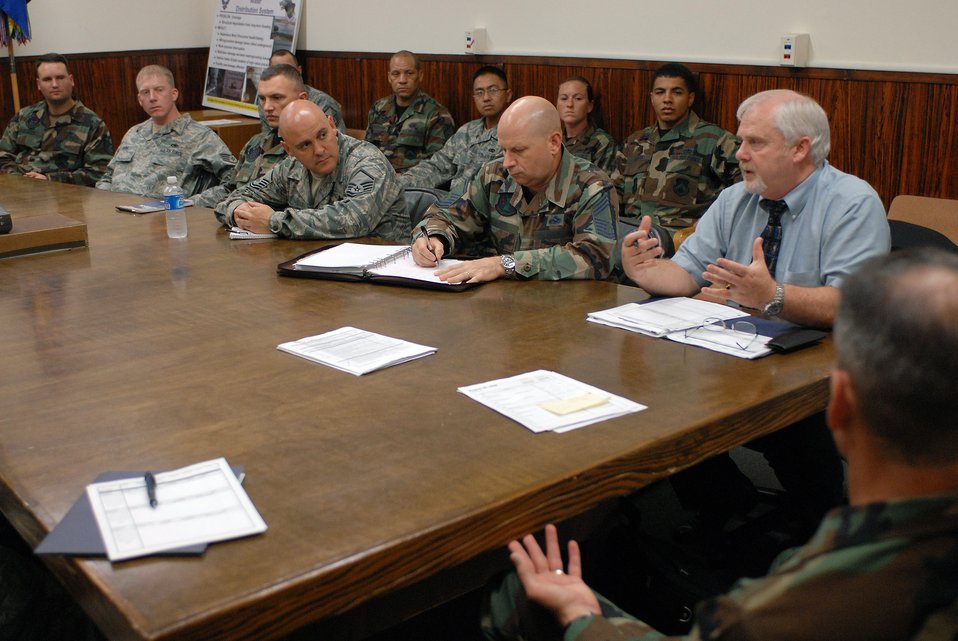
Task force visits Kunsan to study how Airmen use their time

Giles Smay speaks to members of the 8th Maintenance Squadron Aug. 20 at Kunsan Air Base, South Korea. The study focused on Airmen with extra duties and how it affects their jobs. Mr. Smay is with the Air Force Manpower Agency.